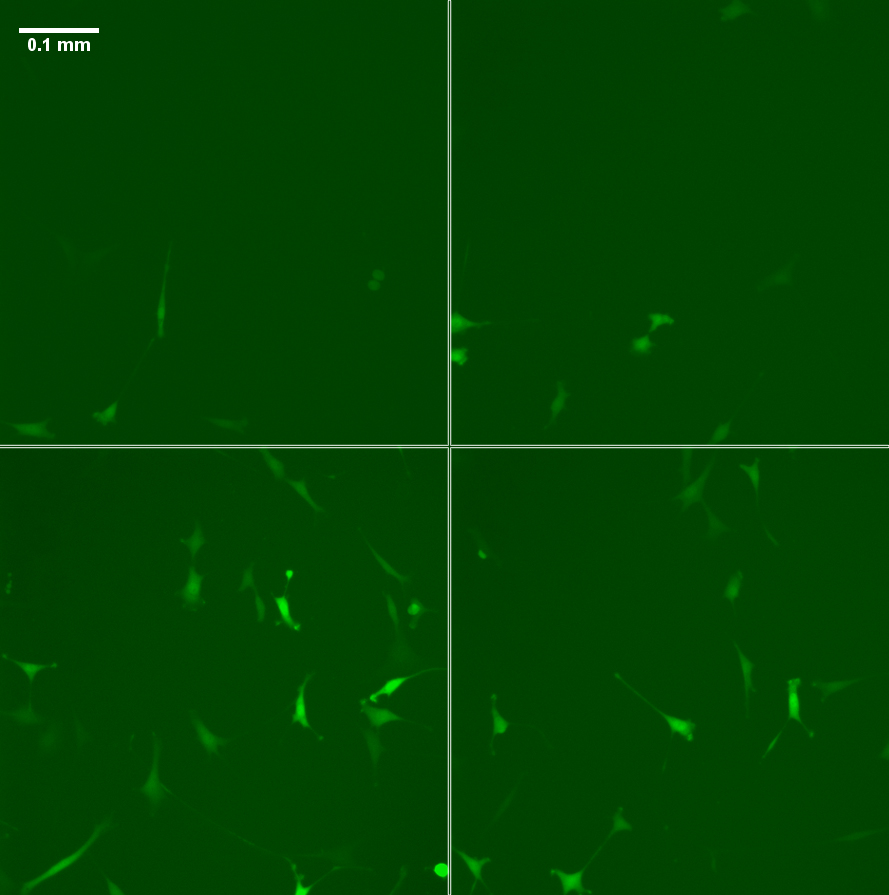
Cell Culture

Time lapse fluorescence images of a cell culture (from top left, start - 14 hours - 28 hours - 42 hours) reveal how the expression of a particular gene in the culture varies not only from cell to cell, but with time.